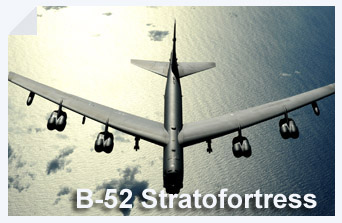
B-52 Stratofortress

The B-52 Stratofortress is a long-range, heavy bomber that can perform a variety of missions. The bomber is capable of flying at high subsonic speeds at altitudes up to 50,000 feet.